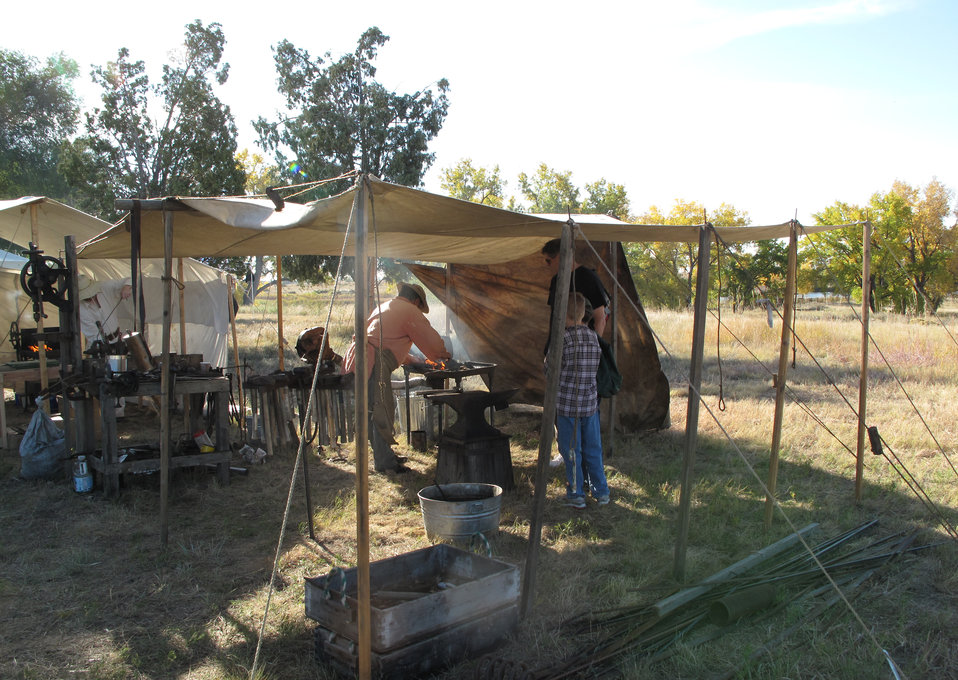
Refuge Round-Up 2010

Colonial days